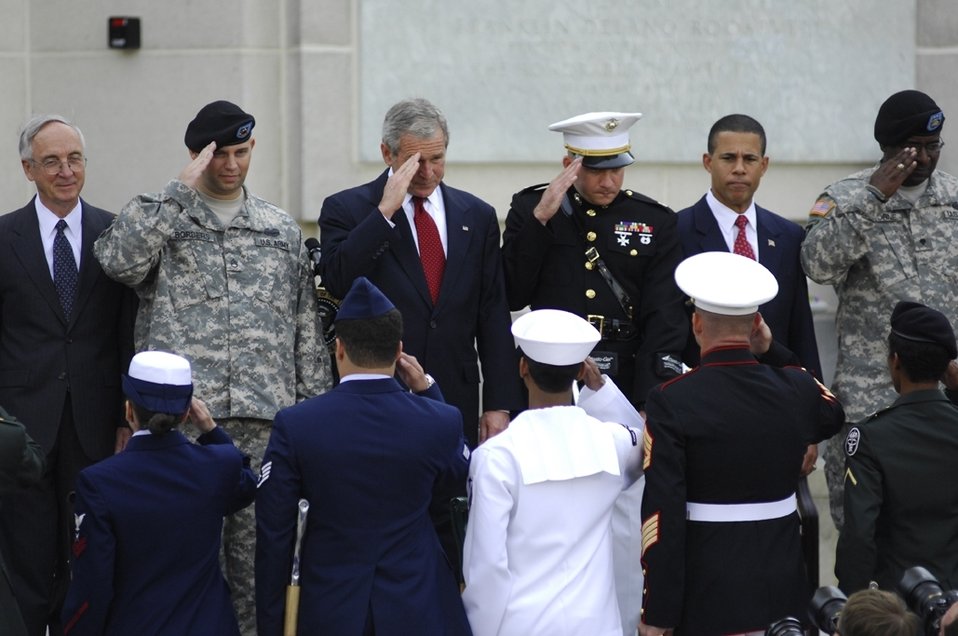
Presidential groundbreaking

President George W. Bush leads a group of military and civilian leaders and wounded warriors in a salute during the Walter Reed National Military Medical Center groundbreaking ceremony at Bethesda Naval Hospital in Maryland, July 3.